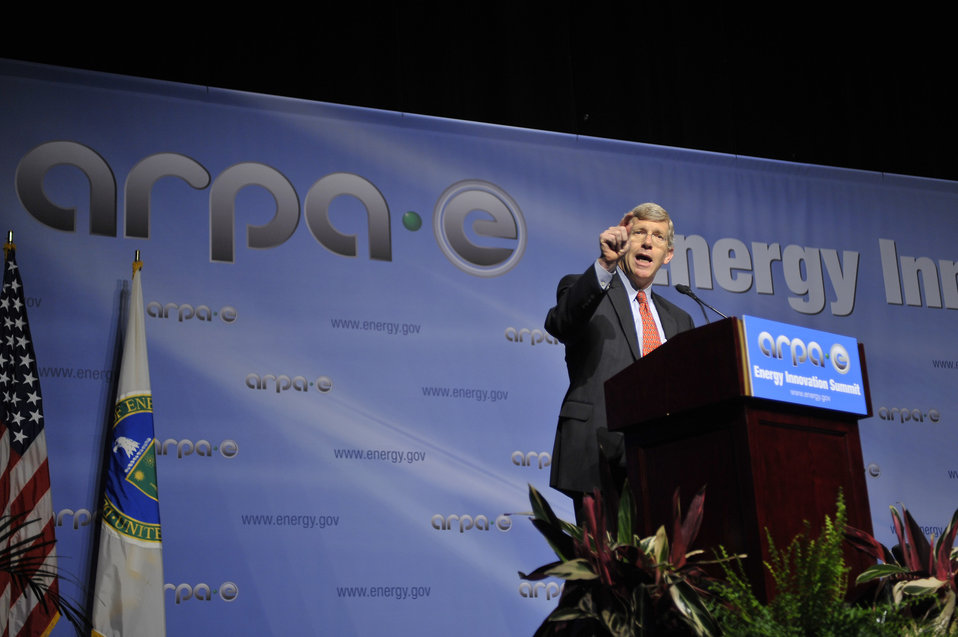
ARPA-E Energy Innovation Summit 2011, 61 of 83

Daniel Poneman, Deputy Secretary, US Department of Energy.